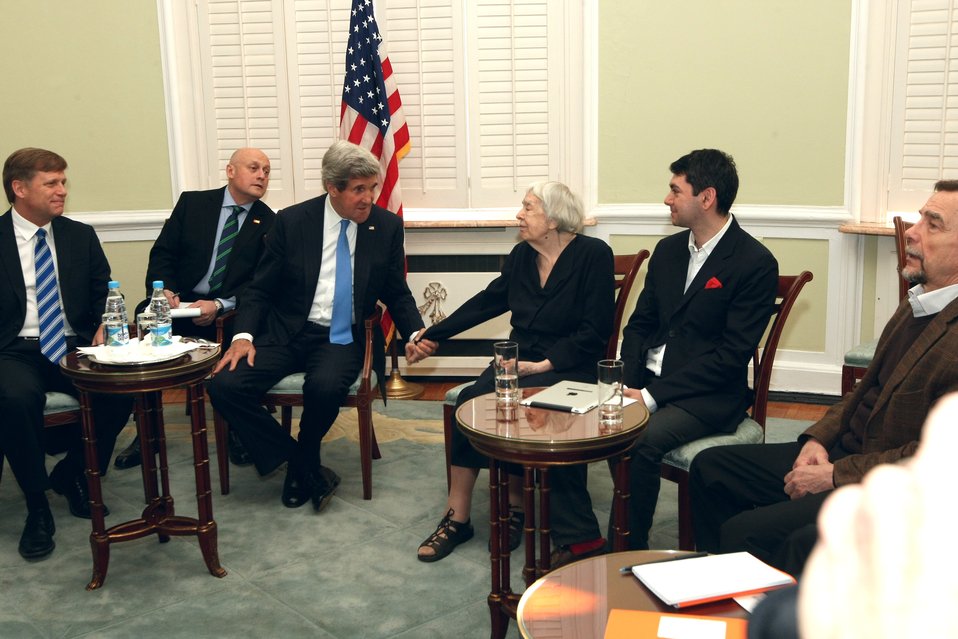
Secretary Kerry Meets with Russian Civil Society

U.S. Secretary of State John Kerry meets with representatives of Russian civil society during a meeting at the U.S. ambassador's residence, the Spaso House, in Moscow, Russia, on May 8, 2013.